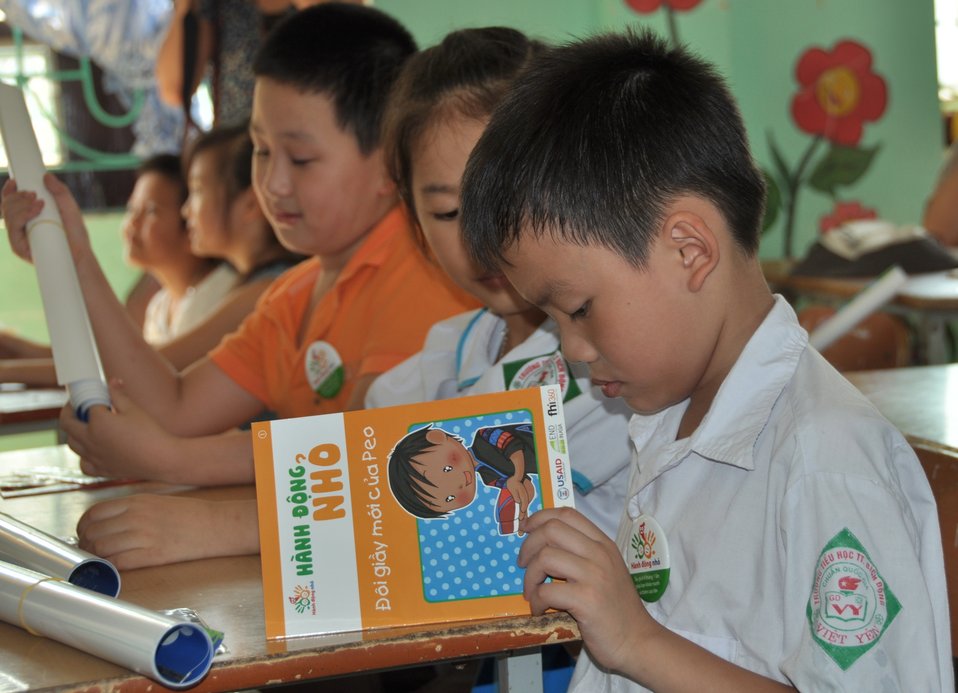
USAID supports deworming education and medication distribution in Bac Giang Province

May 20, 2013